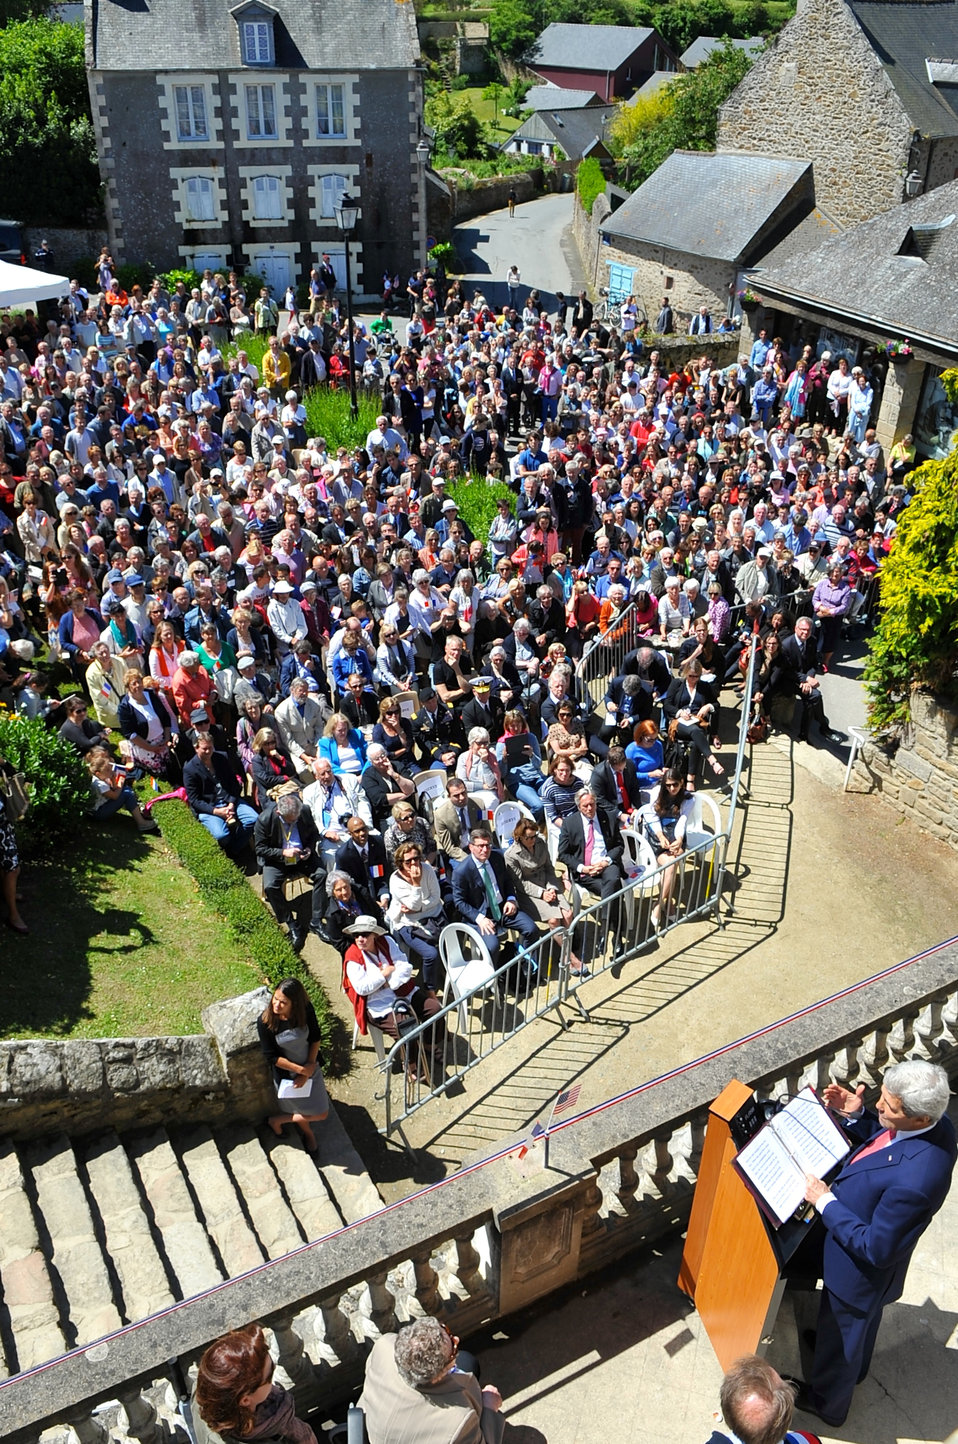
Secretary Kerry Salutes U.S.-French Alliance During Speech in Saint Briac

U.S. Secretary of State John Kerry salutes the endurance of the U.S.-French alliance during a speech in Saint Briac, France, June 7, 2014.